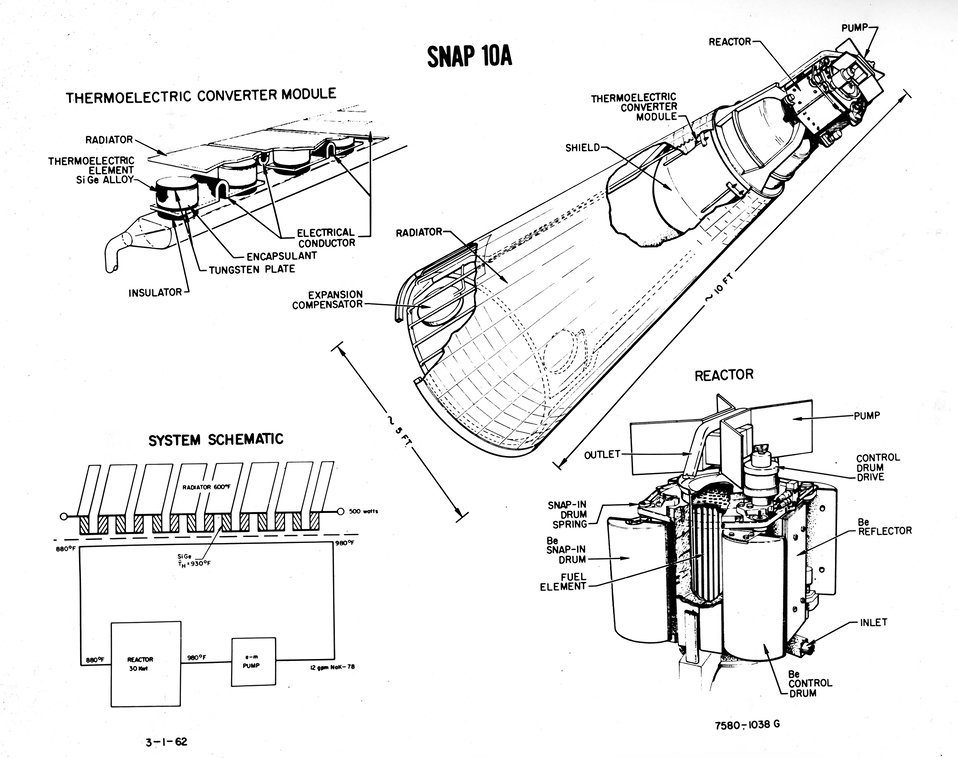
A 500 watt compact nuclear reactor system is being developed by the Atomic Energy Commission with Atomics International.